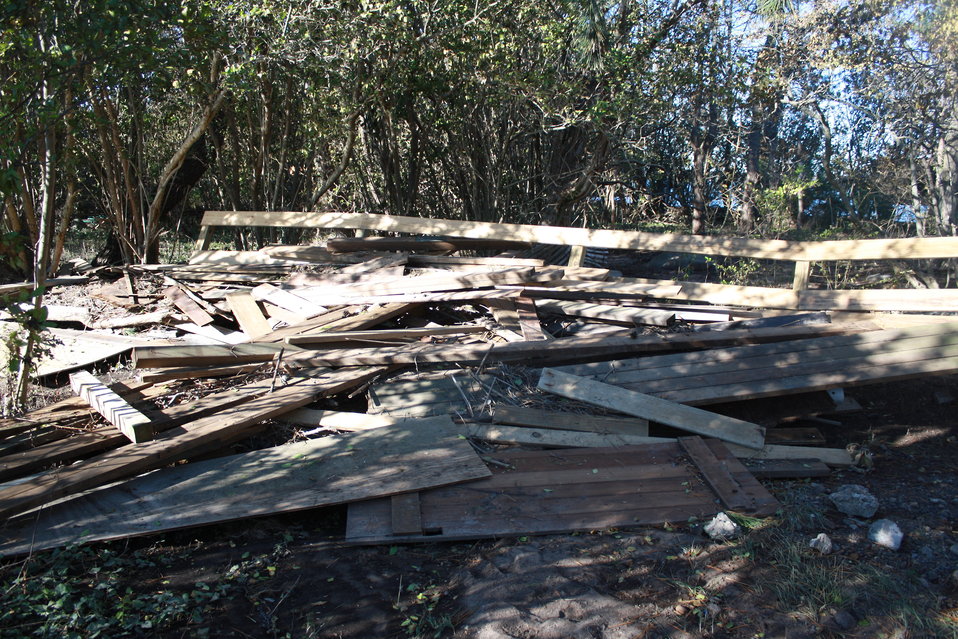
Damage at Stewart B. McKinney National Wildlife Refuge (CT)

A pile of wood was moved around on Outer Island after Hurricane Sandy. The materials were going to be used to finish a walkway on the island.